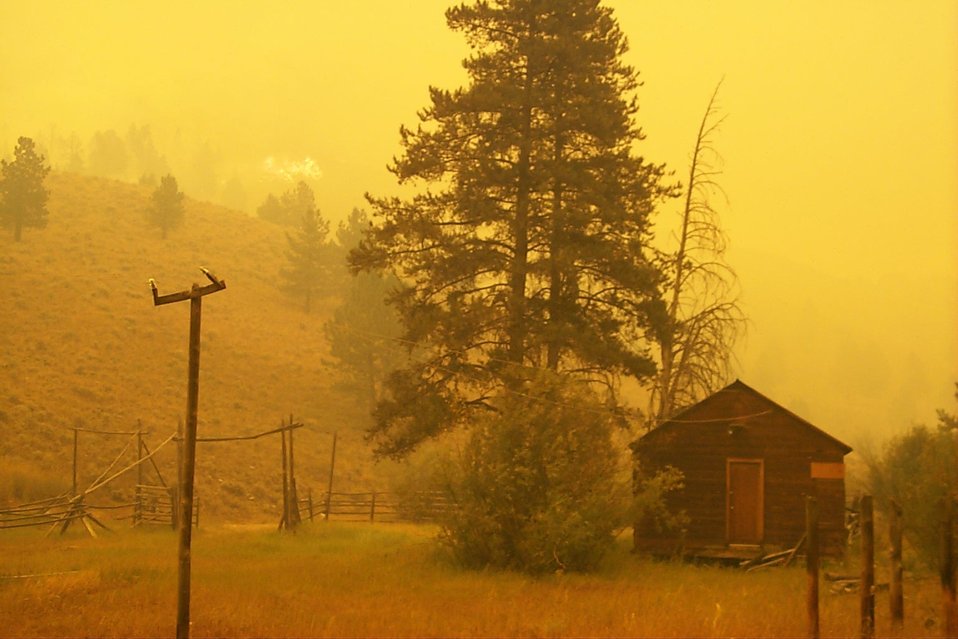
Fire Clearwater Fire Salmon Field Office USRD Upper Snake River District